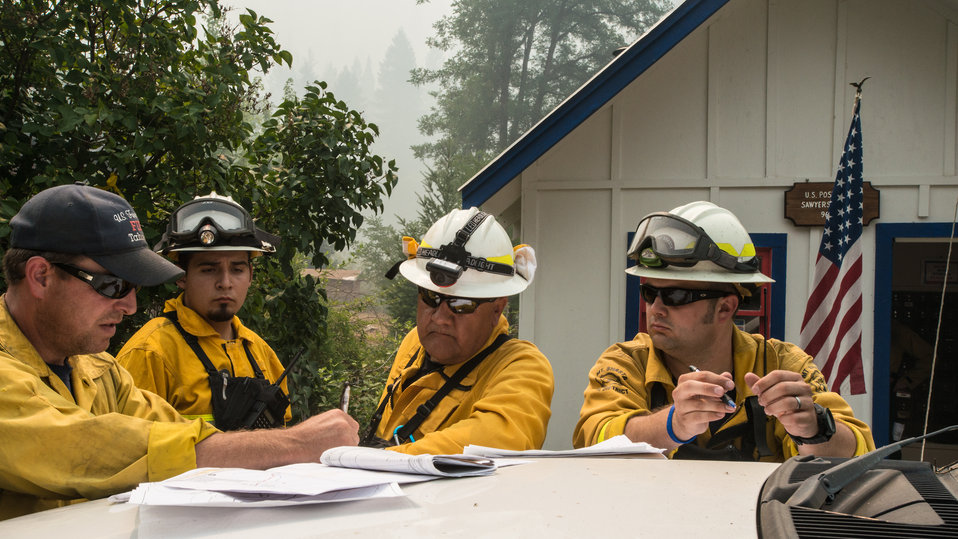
Fire fighters that specialize in structural and wildland firefighting from Tahoe National Forest, Mt. Shasta-Trinity National Forest, South Yreka Fire Department, Dunsmuir-Castella Fire Department and others, called to the Salmon River Complex Fire, meet at the local U.S. Post Office and plan how they will conduct their structure-by-structure assessment of the urban intermix environment, at Sawyers Bar, CA in the Klamath National Forest, on Tuesday, Aug. 6, 2013. The firefighters advise available residents about fire prevention measures they are doing on their own as well as other measures they could take to prepare for fire. Actions such as moving away firewood, cutting and clearing plants next to their structures, and using garden hoses to soak structures and grounds all help in the event the main fire comes into their town.
There are two types structure environments in the realm of wildland firefighting.
This urban intermix structural protection environment is generally the more challenging, where structures have been built within a wildland area, isolated to some degree from other structures, but with no separation from wildland fuels (trees, brush and grass). This requires each structure to be assessed on a case-by-case basis. Fire protection measures will be tailored to each situation; defending these structures require a more complex solution, more firefighters, equipment and resources per structure.